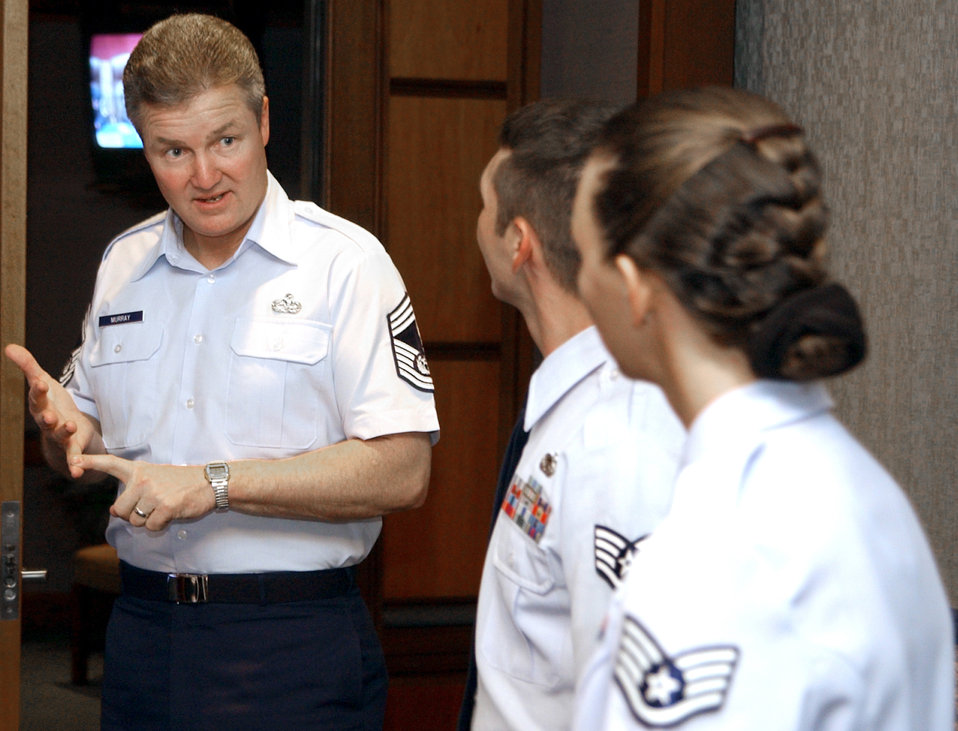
Chief visit

MAXWELL AIR FORCE BASE, Ala. -- Chief Master Sgt. of the Air Force Gerald Murray visits with Airmen here after arriving June 16 for the 10th Annual Worldwide Command Chief Master Sergeants' Conference. More than 250 active-duty, Reserve and Guard command chief master sergeants attended the annual conference.